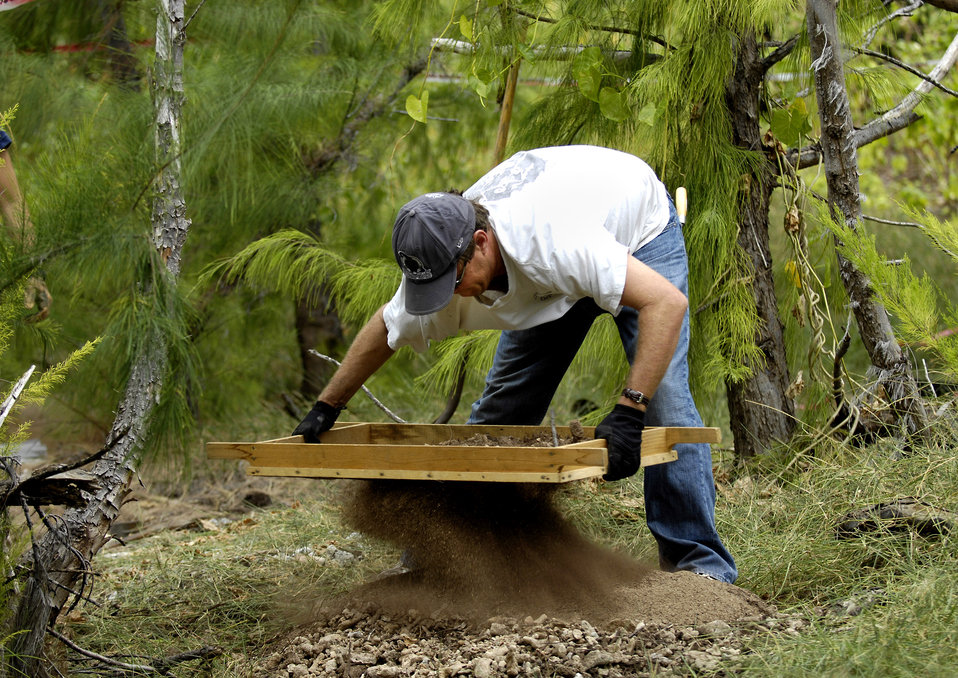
Servicemembers search for POW/MIAs on Wake Island

Greg Berg uses a sifter to look for bone and artifacts at a dig site Jan. 12 on Wake Island. Mr. Berg, a forensic anthropologist, was sent to do a site survey after Wake Island officials notified the Joint POW/MIA Accounting Command of bones located on the island. JPAC officials are charged with achieving the fullest possible accounting of all Americans missing as a result of past conflicts.